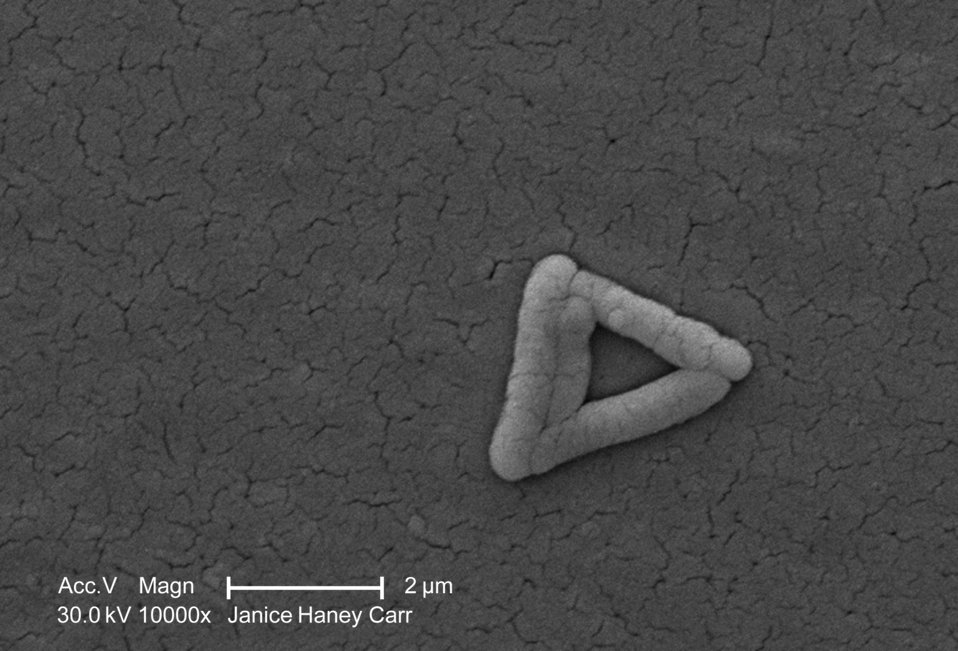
Under a high magnification of 10000X, this scanning electron micrograph (SEM) revealed the presence of four Gram-negative Salmonella typhimurium bacteria, that had been isolated from a pure culture. See PHIL 10977 for a colorized version of this image.How do people catch Salmonella??